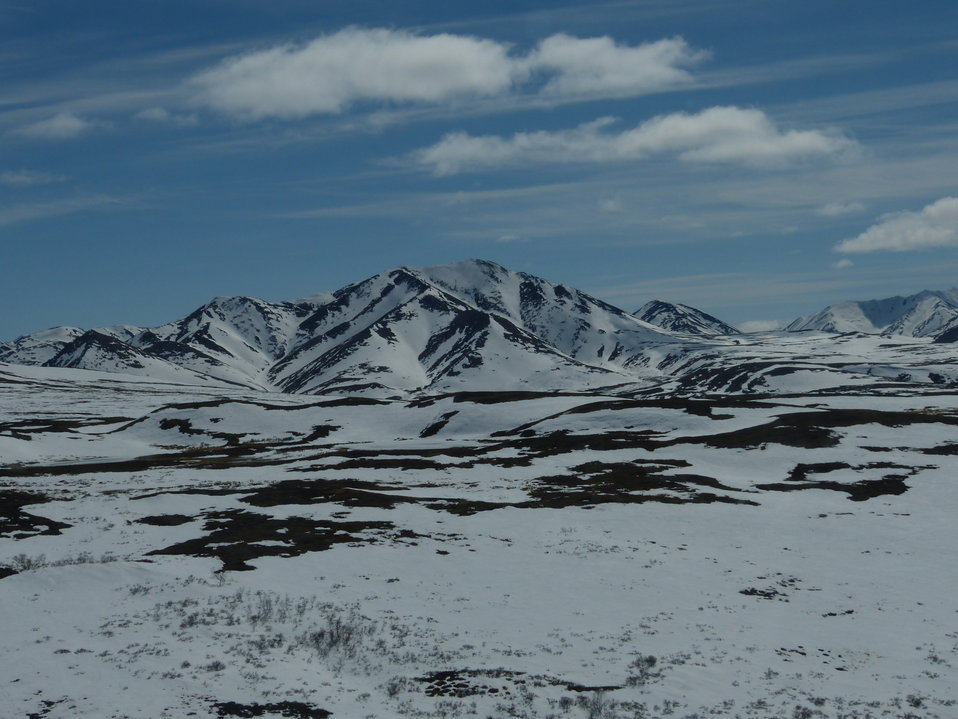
Kilbuck Mountains May2013 KSowl

Cliff-nesting raptor survey, Kilbuck Mountains, Yukon Delta National Wildlife Refuge

Photo credit: Kristine Sowl,
USFWS, YDNWR